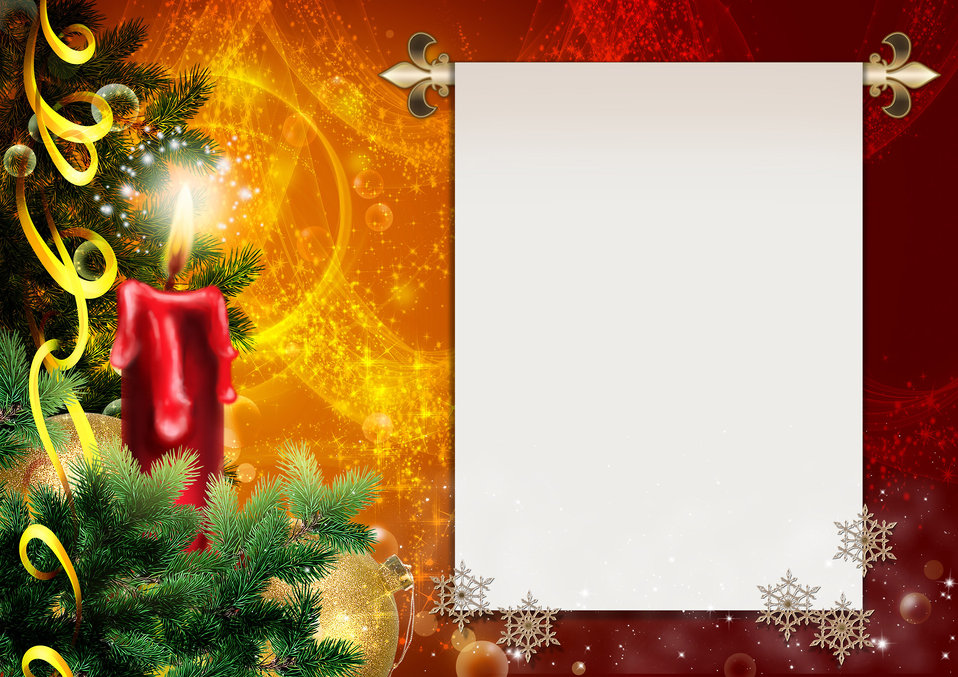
Background for postcards

Background for christmas cards. all that remains is to just add text..